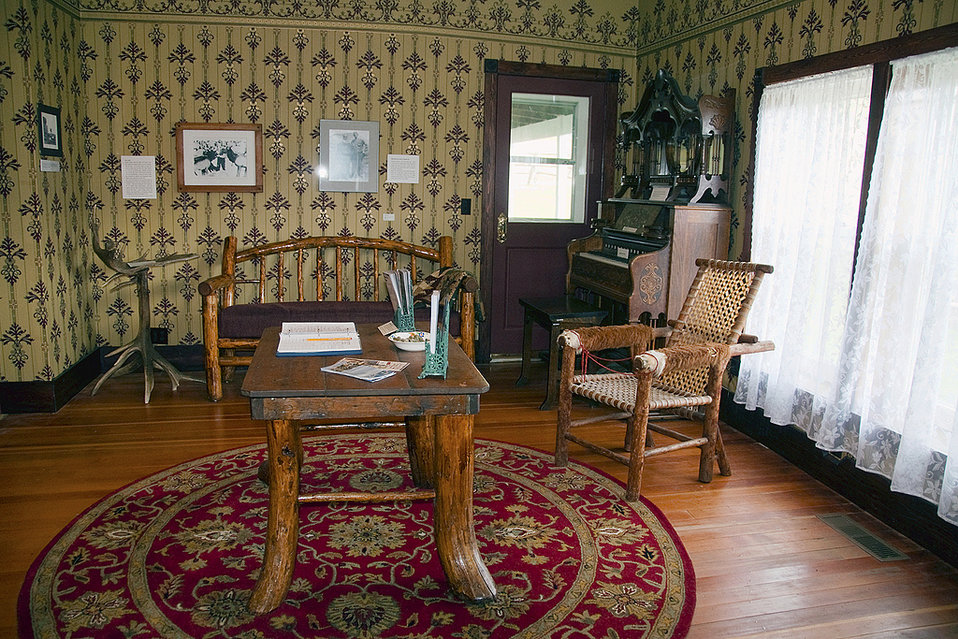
furnished room, Miller Homestead